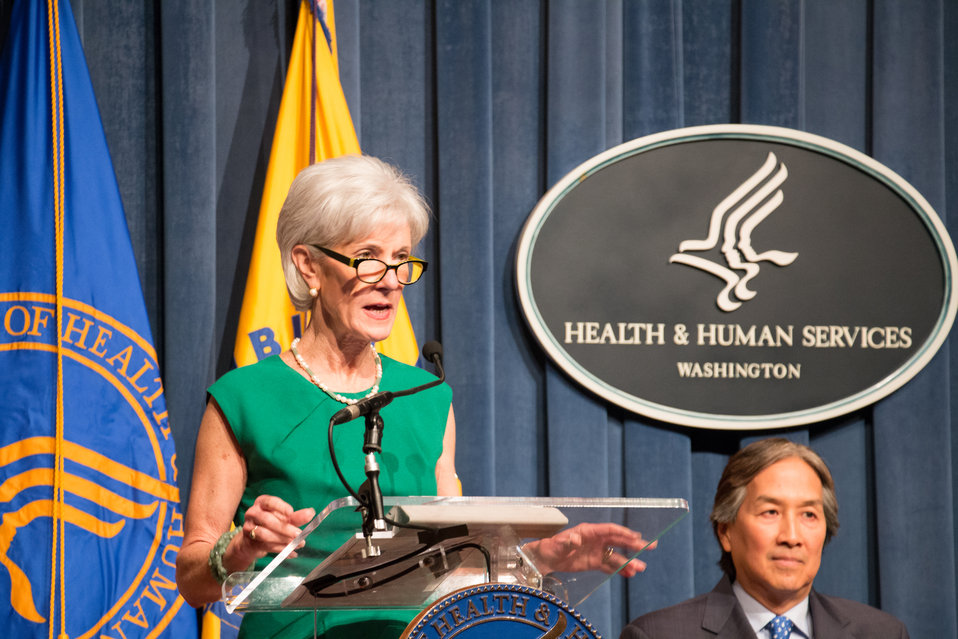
VHAP Launch (99 of 511)